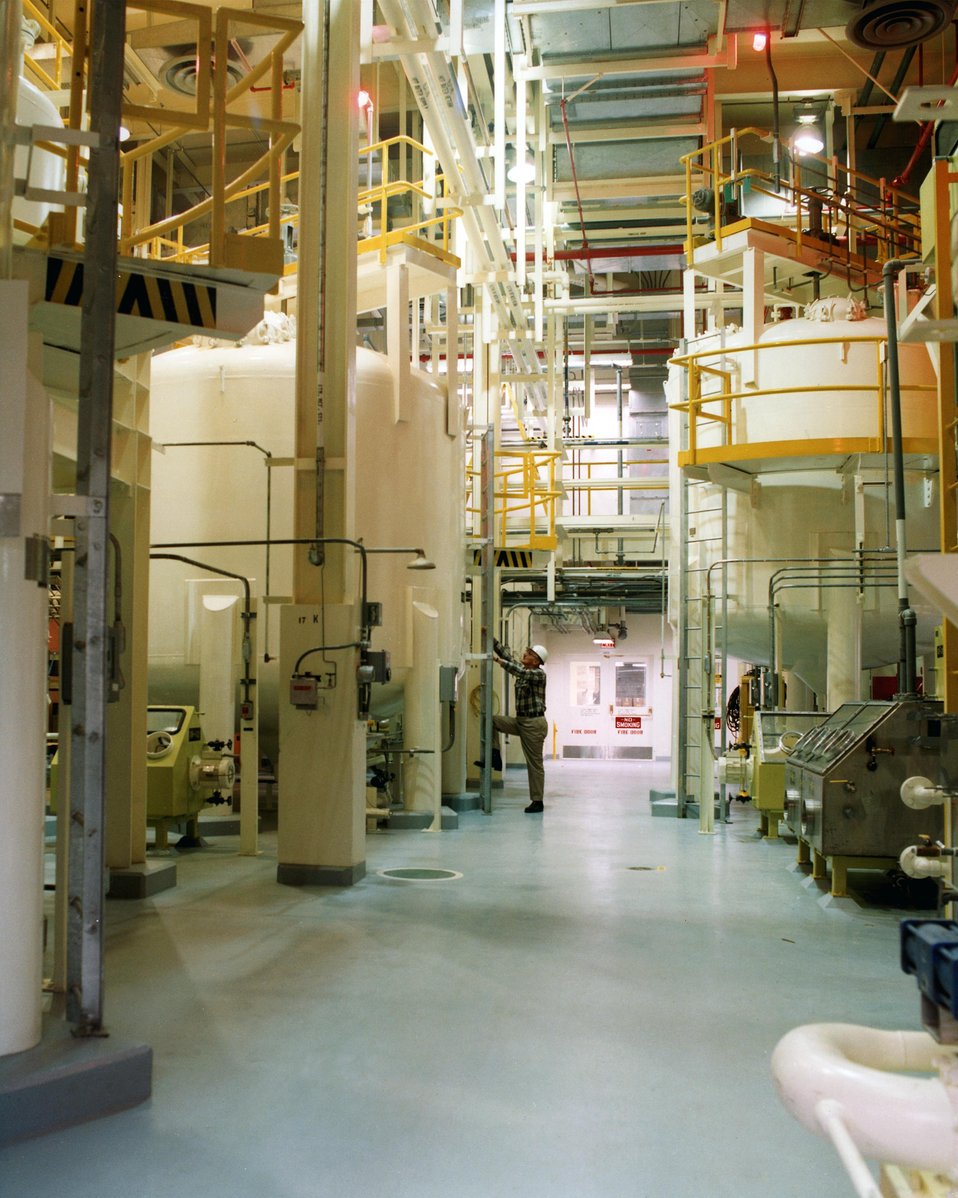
LIQUID STORAGE TANKS IN BUILDING 371.

ALL PLUTONIUM OPERATIONS AT THE PLANT ARE CARRIED OUT IN HIGHLY SPECIALIZED FACILITIES, PROTECTING THE EMPLOYEES AND THE SURROUNDING POPULATION AND ENVIRONMENT. THE BUILDING IS DESIGNED TO WITHSTAND TORNADO, EARTHQUAKE, SNOW STORM, AND FLOOD DAMAGE. THE FACILITY IS ONE LARGE STRUCTURE DIVIDED INTO THREE AREAS: PLUTONIUM RECOVERY, WASTE TREATMENT, AND SUPPORT. PERSONNEL PROTECTION IS PROVIDED BY SPECIAL PROTECTION DEVICES, FOR EXAMPLE, PLUTONIUM IS HANDLED REMOTELY FROM INSTRUMENTED CONTROL ROOMS, IN SHIELDED GLOVE BOXES, AND IN CONCRETE VAULT CANYONS. LOW- LEVEL PLUTONIUM CONTAMINATED WASTE IS TREATED IN THESE TANKS. THIS FACILITY IS CURRENTLY BEING REEVALUATED TO DEVELOP A REVISED AND UPGRADED PROCESS.